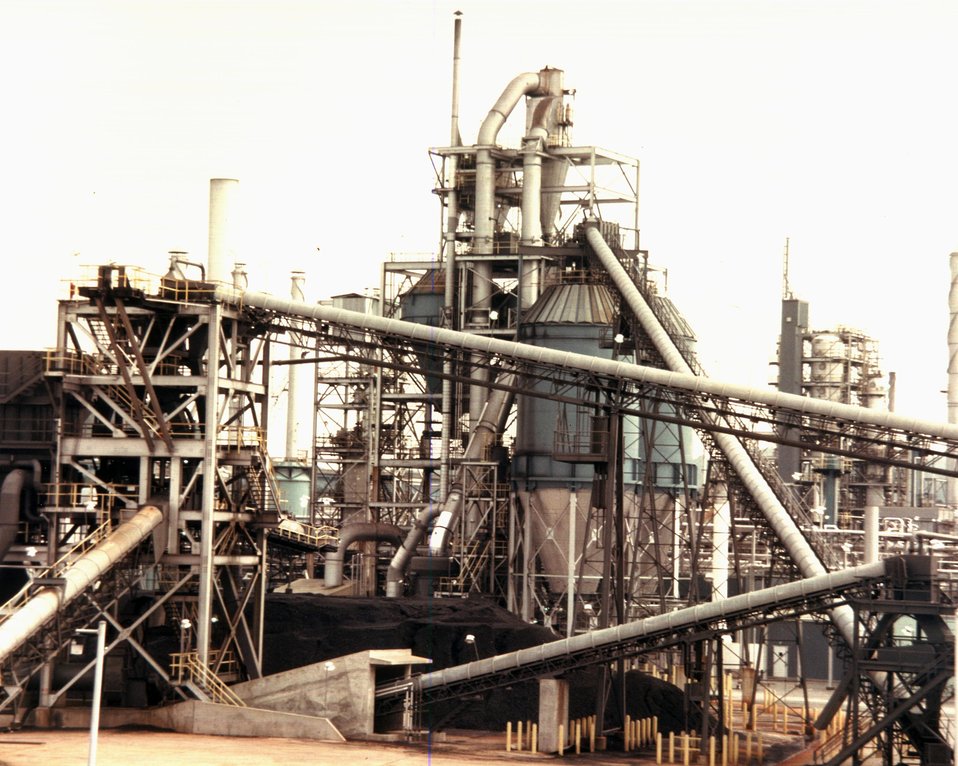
COAL PREPARATION AND STORAGE AREA OF THE H-COAL PILOT PLANT.